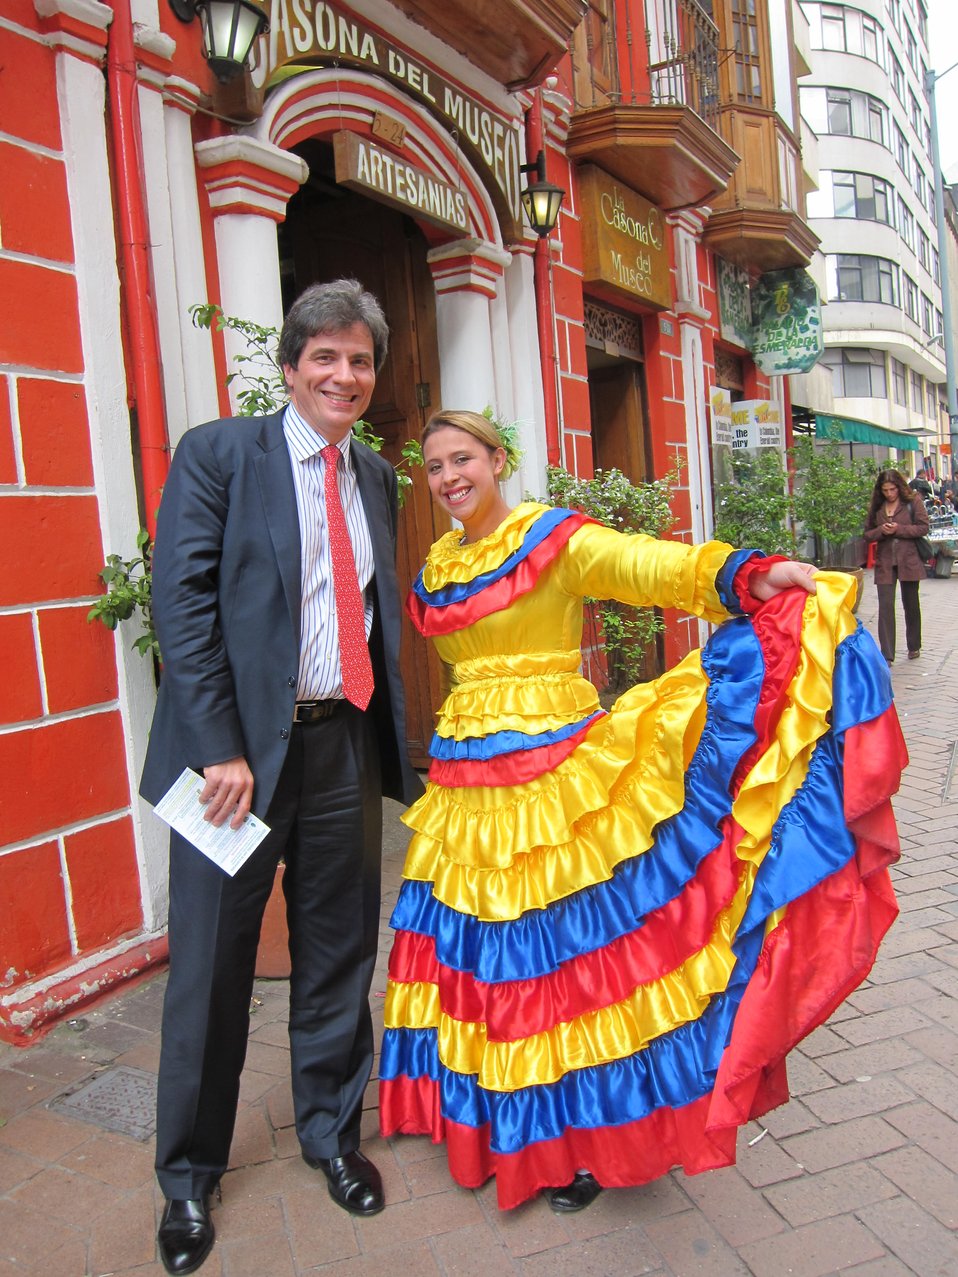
Assistant Secretary Fernadez Travels to Colombia

Assistant Secretary of State for Economic and Business Affairs Jose Fernandez travels to Bogota, Colombia, on February 15, 2012.